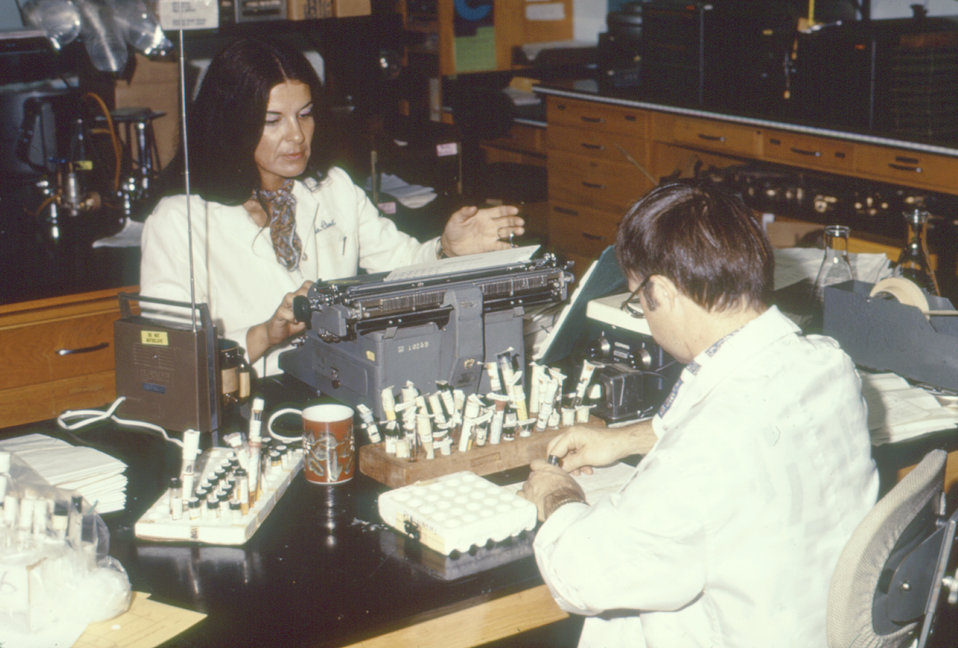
Here are two laboratorians, Ms. Maxine Clark and David McLaughlin, formerly of the CDC's Mycology Division, Bureau of Labs.